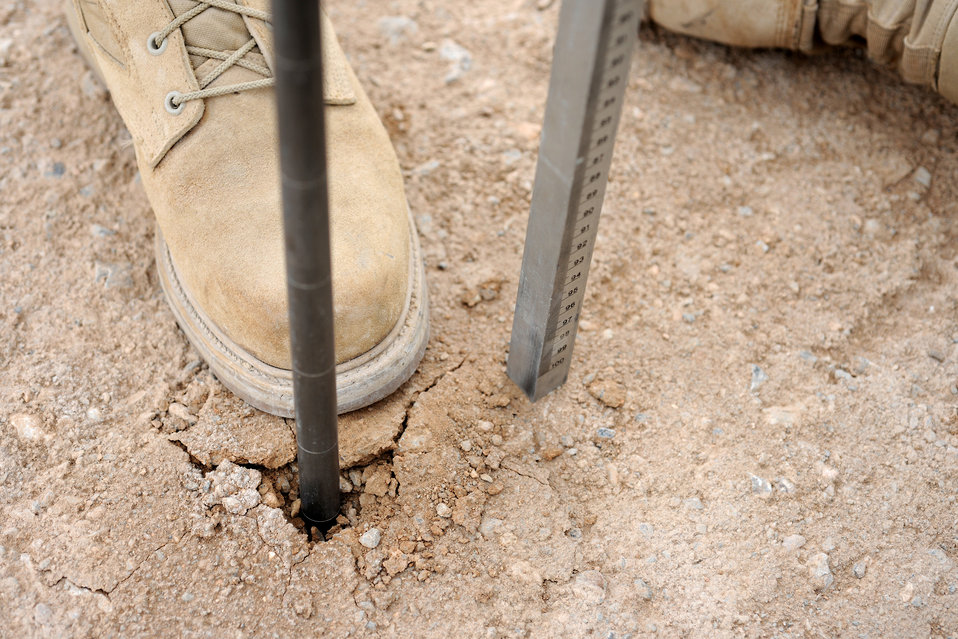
CRW Assessment Team evaluates cargo solutions for stakeholders in Afghanistan

A dynamic cone penetrometer is used to measure the soil subsurface strength of the airfield at Forward Operating Base Farah, Afghanistan, Dec. 2, 2009. The soil analysis along with airfield gradient measurements will be part of a complete report compiled by an Air Force airfield assessment team from the 621st Contingency Response Wing at Joint Base McGuire, N.J. The team of 12 Airmen deployed to Afghanistan for a 45-day tour to visit all established airfields with a major military presence with the goal of helping the International Security Assistance Force commander understand how to get more people and cargo into the war zone and then sustain those forces once they are in place.